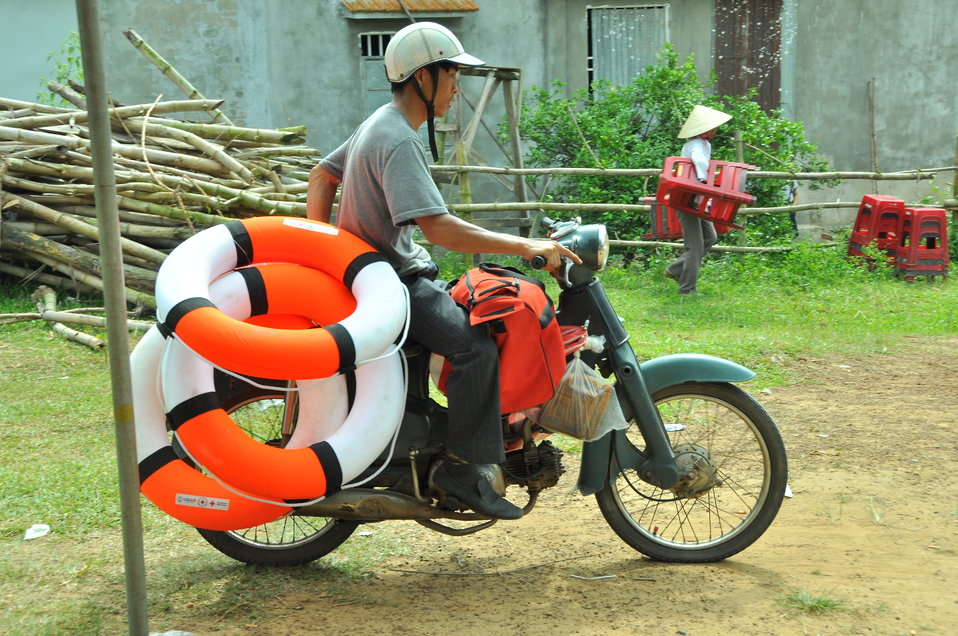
USAID, Red Cross Support Disaster Response Drill in Duy Hoa Commune, Quang Nam Province

Duy Hoa Commune, Quang Nam Province
December 5, 2012